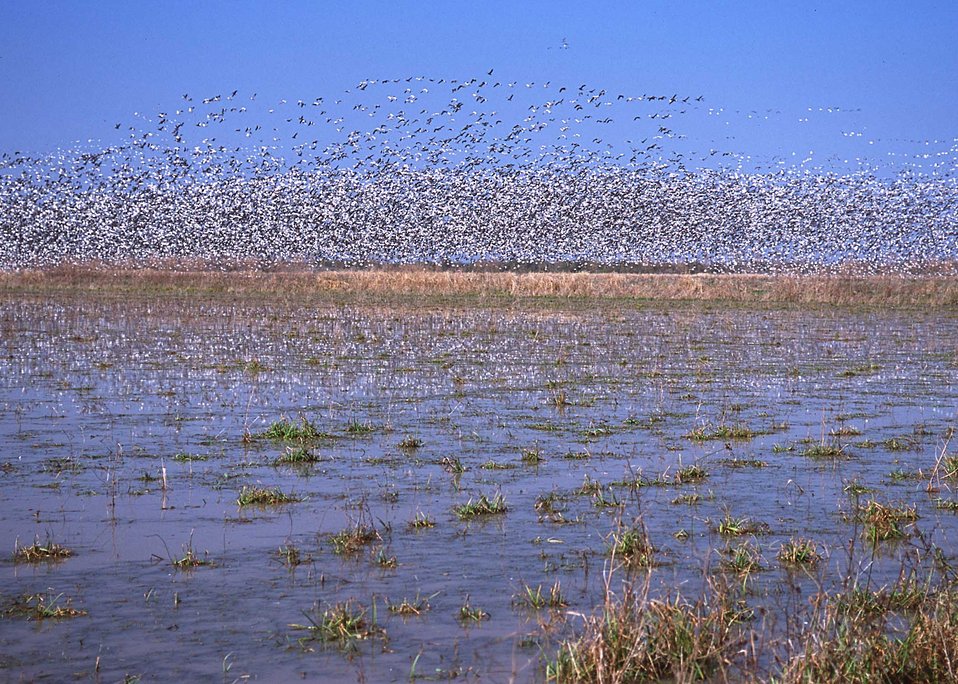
Flooded croplands near Gueydan, Louisiana attract thousands of geese in the winter.